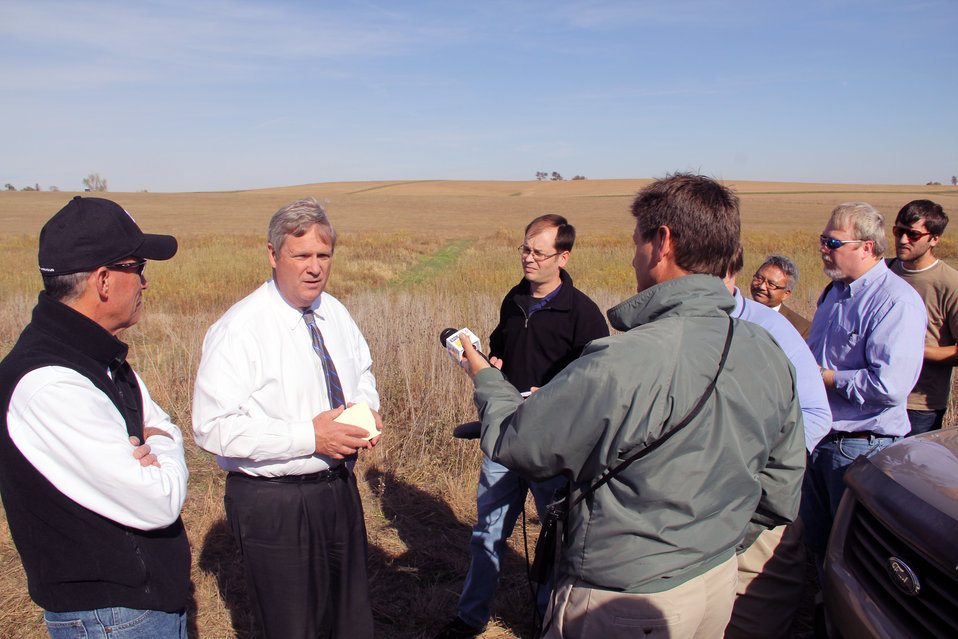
Agriculture Secretary Tom Vilsack visits Gary Matters farm near Lewis, IA on Monday, Oct. 8, 2012. During his visit Secretary Vilsack announced the allocation of 400,000 acres to support conservation and restoration of wildlife and their habitats as part of the U.S. Department of Agriculture’s (USDA) Natural Resources Conservation Service (NRCS) Conservation Reserve Program (CRP). Matters implements a variety of conservation practices on 200 acres of land enrolled in CRP in southwest Iowa. USDA has enrolled more than 12 million acres in CRP, a voluntary program available to agricultural producers to help them use marginal and environmentally sensitive land to bring conservation and economic benefits for their land and communities.